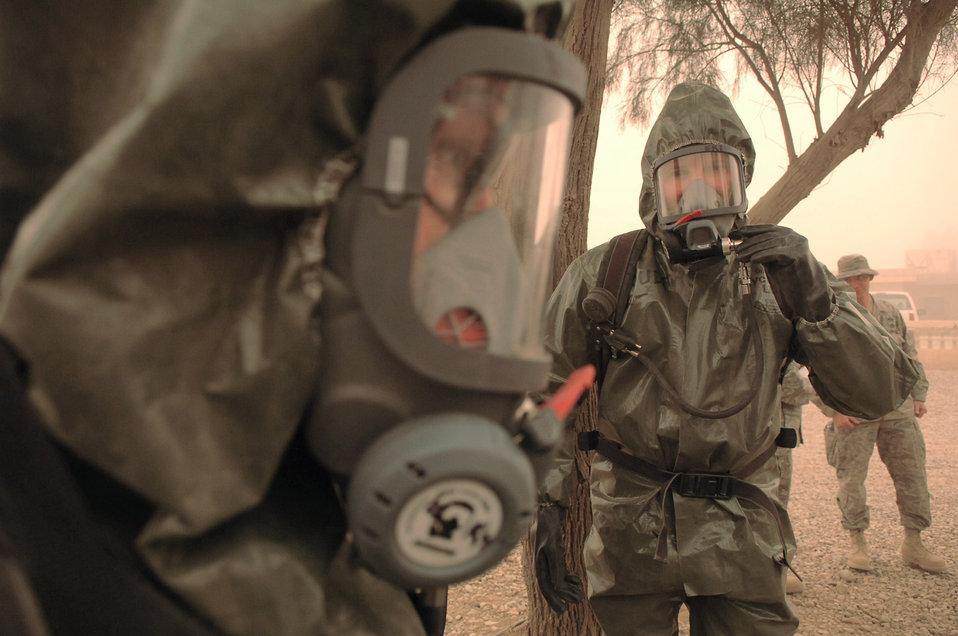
AOR emergency managers gather at Balad to hone skills

Staff Sgt. Amber Albano and Senior Master Sgt. Thomas Stoudt prepare to enter a building containing an unknown powder substance during a training scenario at Balad Air Base, Iraq, April 17. The scenario was one of many that Airmen from Balad, Kirkuk, Ali Base and Al Asad Airfield participated in during a week-long emergency management training session which concluded April 19. Sergeant Albano is deployed to 506th Expeditionary Civil Engineer Squadron as the emergency manager at Kirkuk Regional AB. Sergeant Stoudt is deployed to Southwest Asia as the functional manager for the emergency management career field.